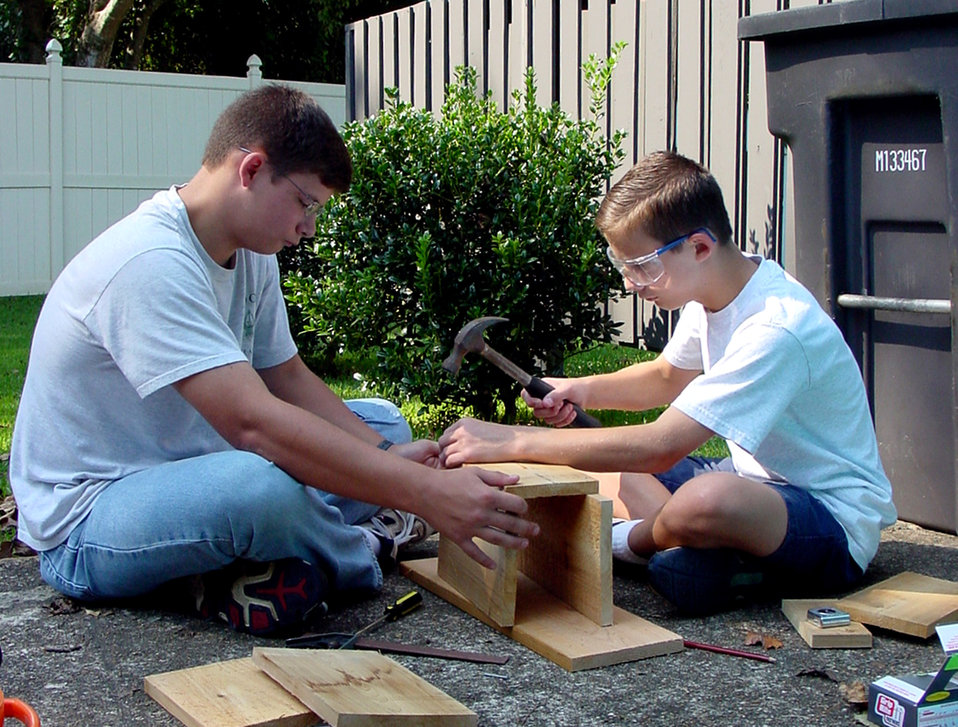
Columbus goes 'batty'

COLUMBUS AIR FORCE BASE, Miss. -- Boy Scouts Charlie Burgess and his brother, Jim, construct one of eight boxes that will potentially house up to 200 bats each here.